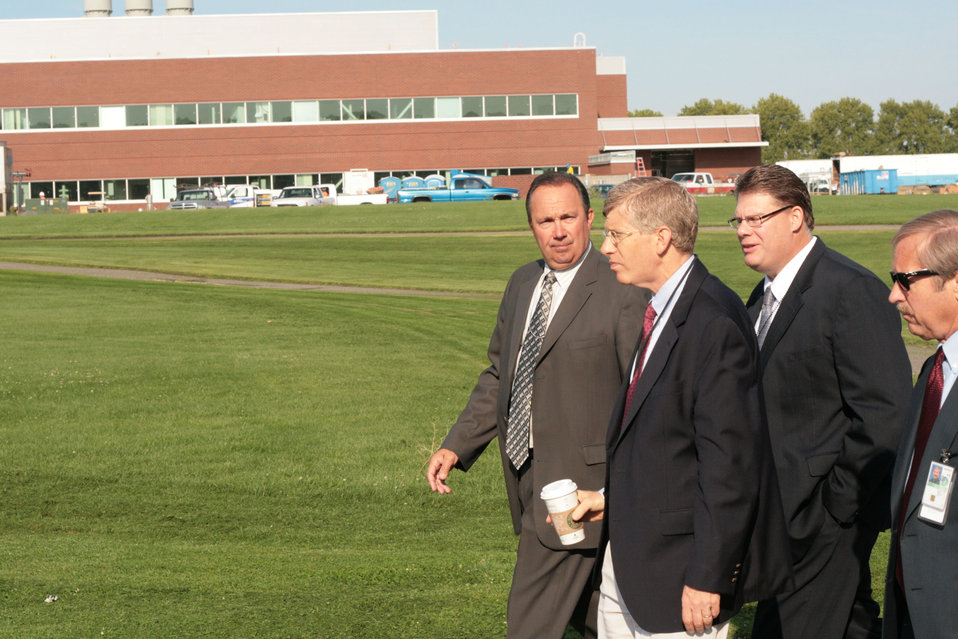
P-23